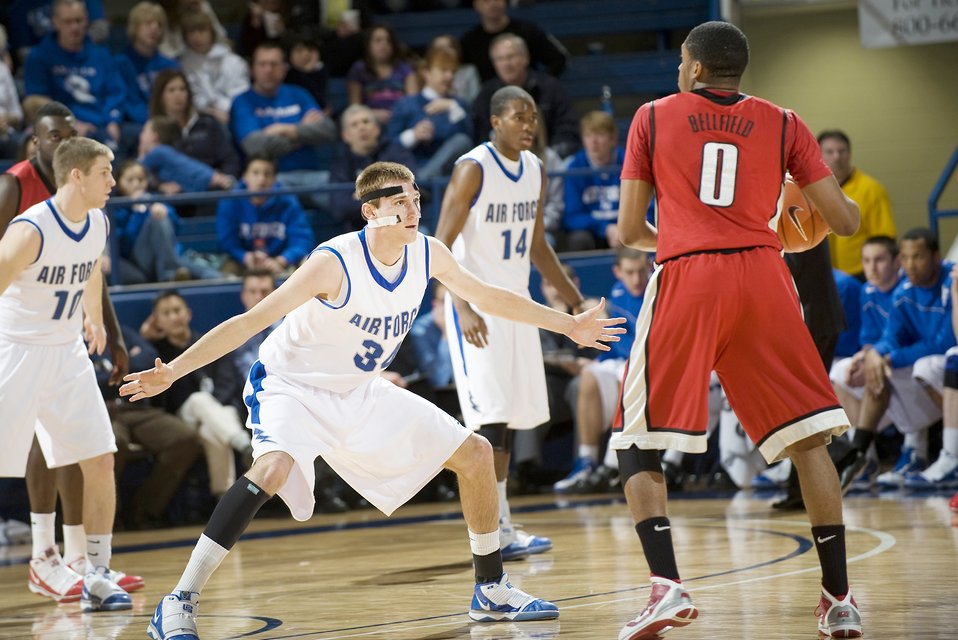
Falcons fall to Running Rebels

Air Force freshman center Taylor Broekhuis tries to close down the lane as the Falcons attempt to slow down the University of Nevada Las Vegas Running Rebels during the Feb. 27, 2010, basketball game at the U.S. Air Force Academy's Clune Arena. The Falcon defense struggled to contain UNLV as the Rebels hit a season high 13 3-pointers. UNLV went on to defeat the Falcons by a score of 77 to 47.